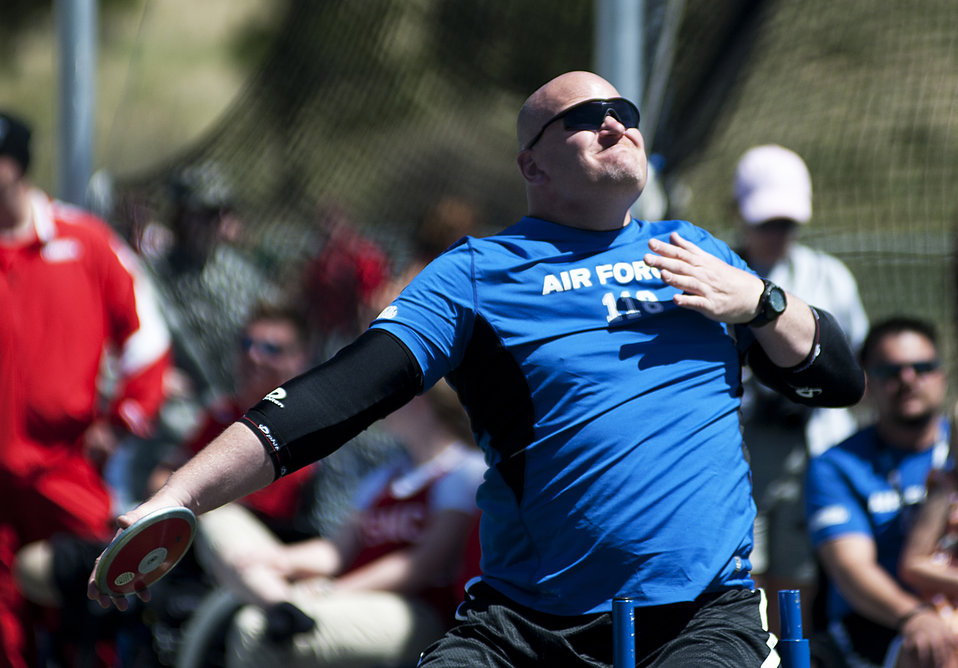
Warrior Games

Keith Sekura prepares to throw a discus during the track and field competition of Warrior Games 2012 at the U.S. Air Force Academy in Colorado Springs, Colo., May 4, 2012. Sekura is with the Air Force team.